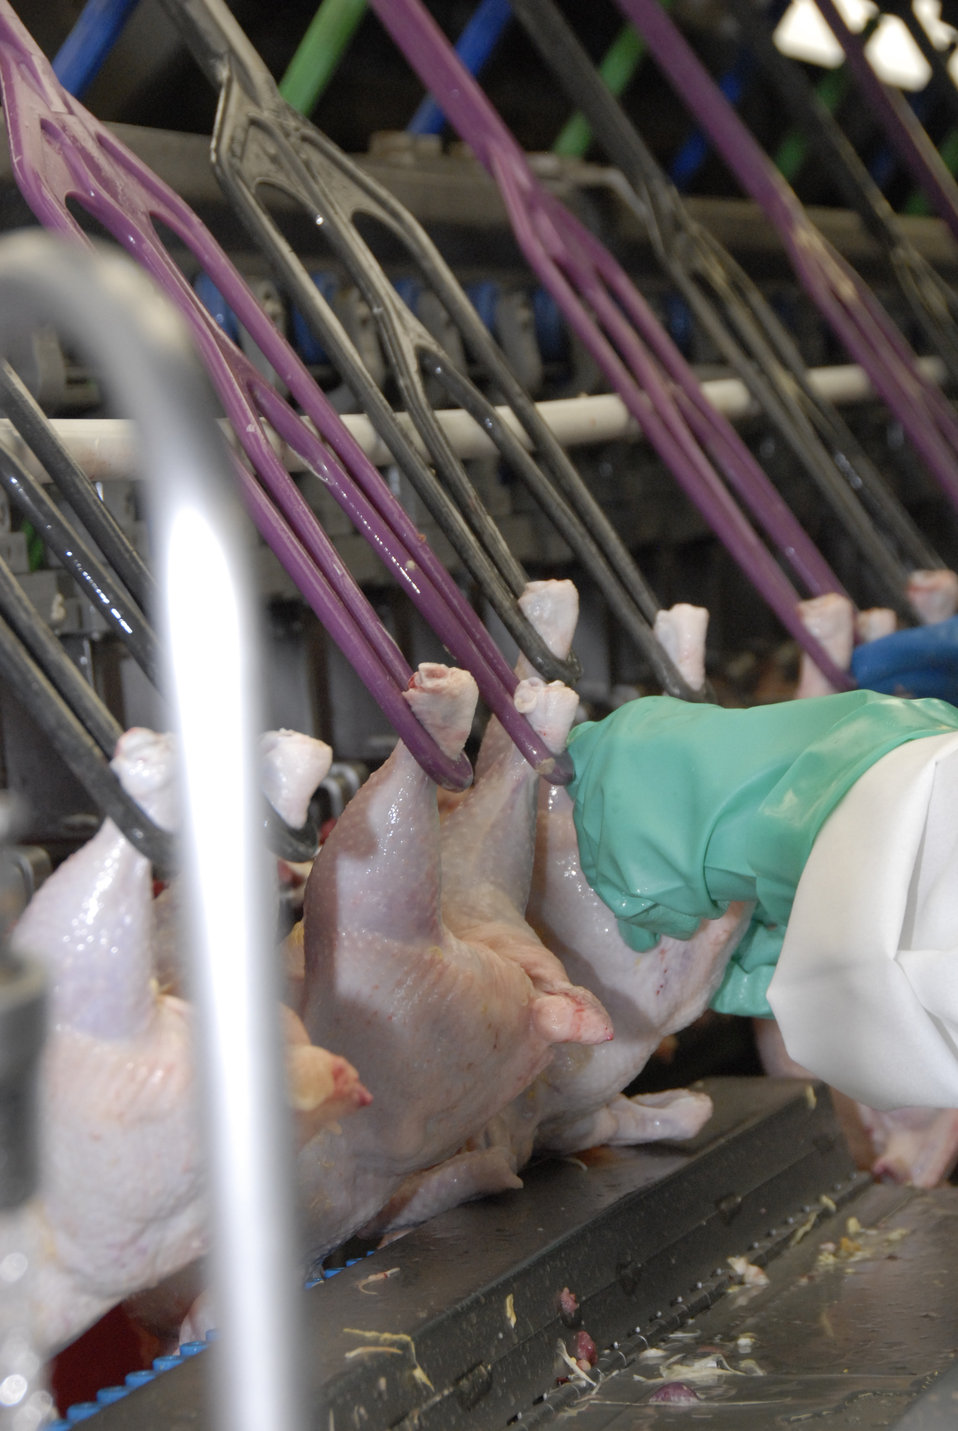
U.S. Department of Agriculture (USDA) Food Safety and Inspection Service (FSIS) inspectors examine chickens at the Holmes poultry slaughterhouse in Nixon, Texas on June 10, 2008.